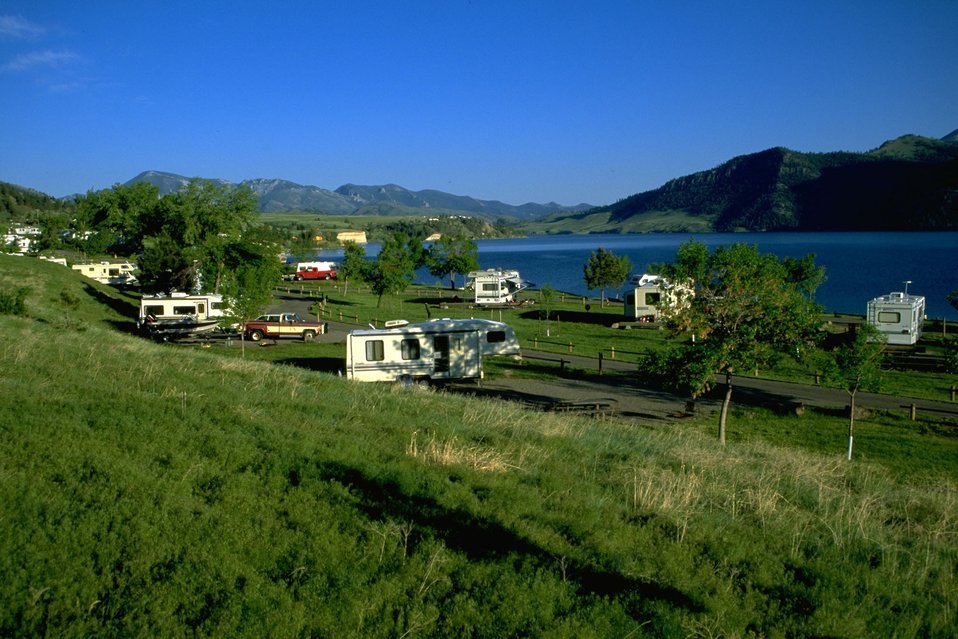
Camping at Holter Lake Campground